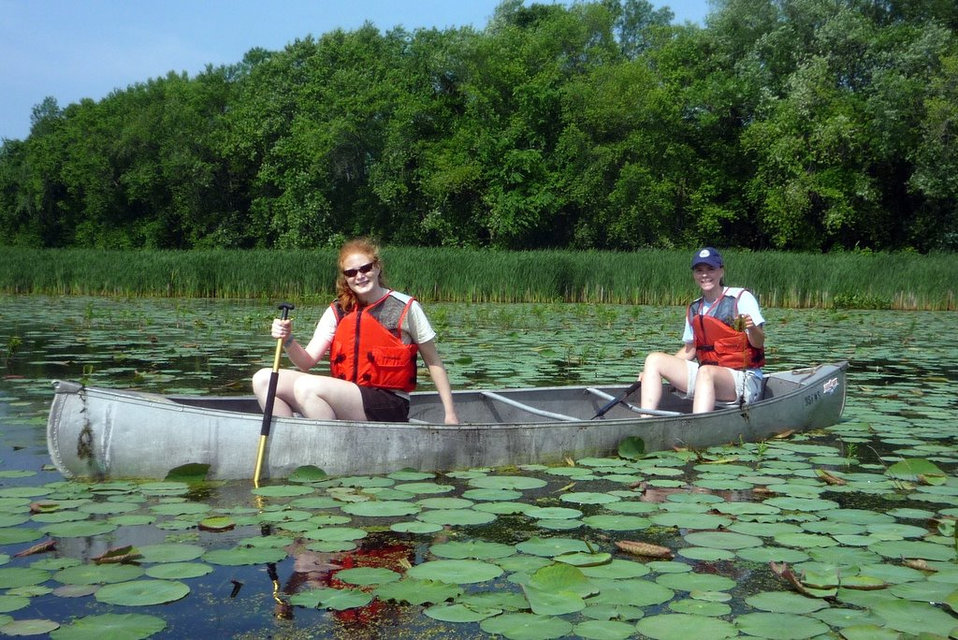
Pulling invasive species

U.S. Fish and Wildlife Service